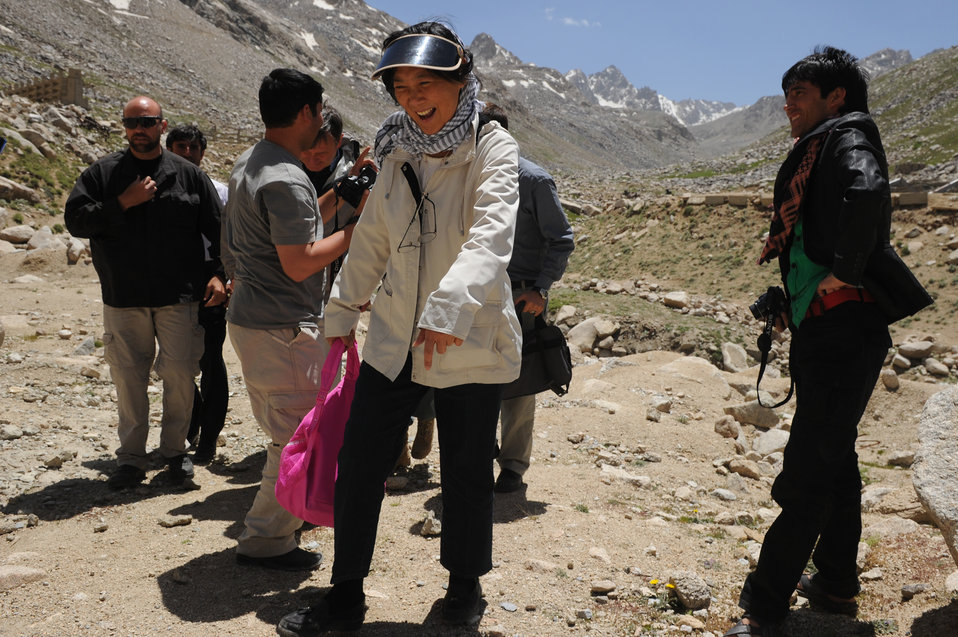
Ching Eikenberry, wife of U.S. Ambassador Karl W. Eikenberry, visits the area near the North end of the Salang Tunnel on the border of Parwan and Baghlan Provinces, Afghanistan, on Wednesday, June 15, 2011. (S.K.Vemmer/Department of State)